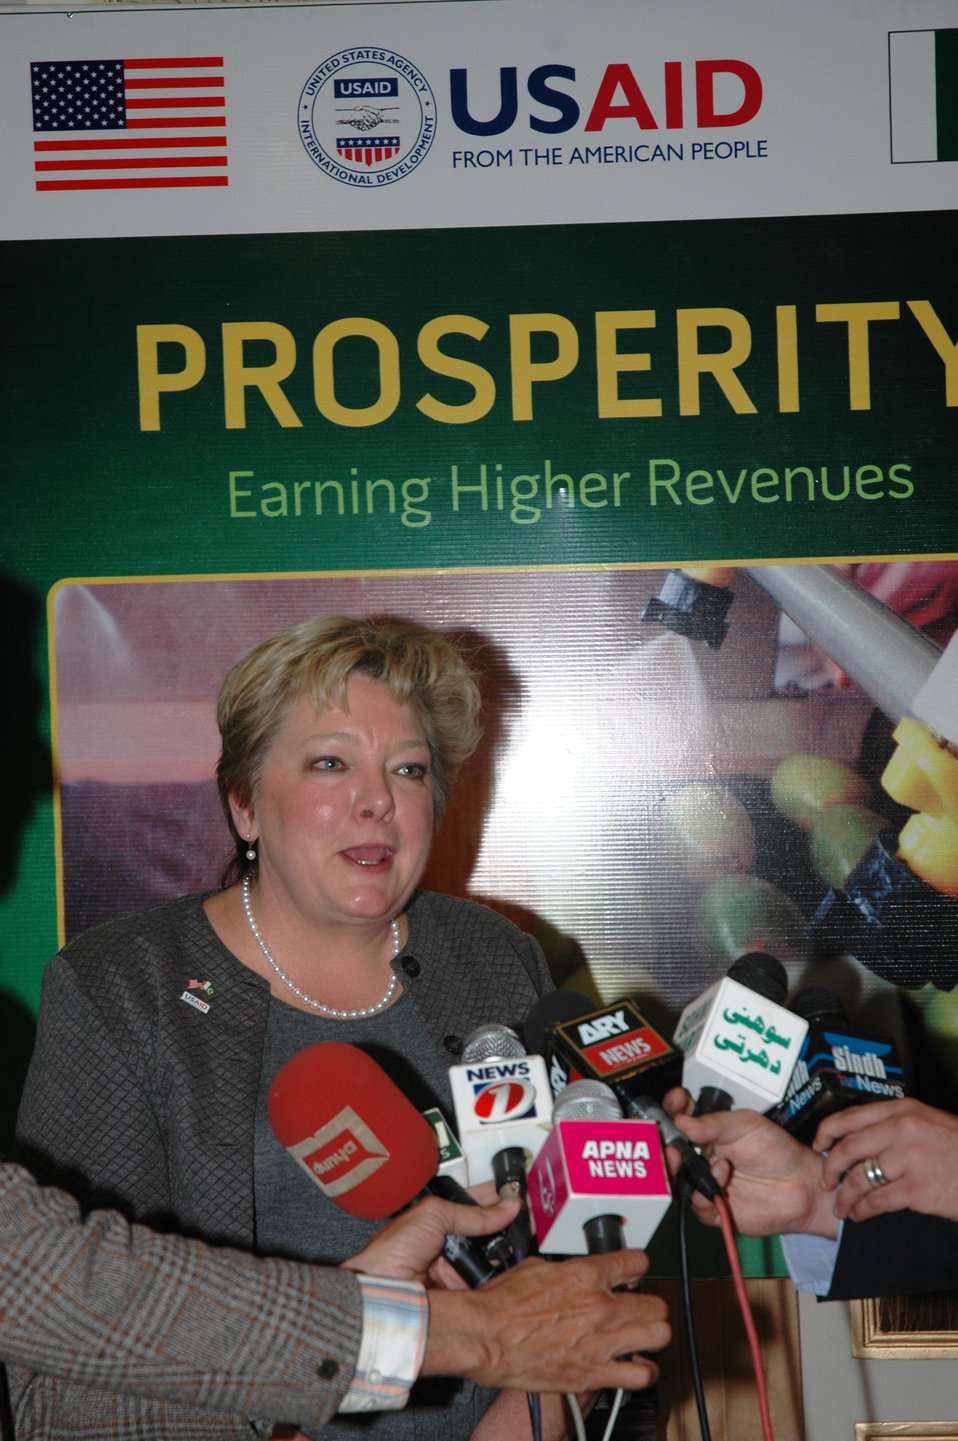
Reaching New Export Destinations

USAID Deputy Mission Director Karen Freeman talking to media after the conference.